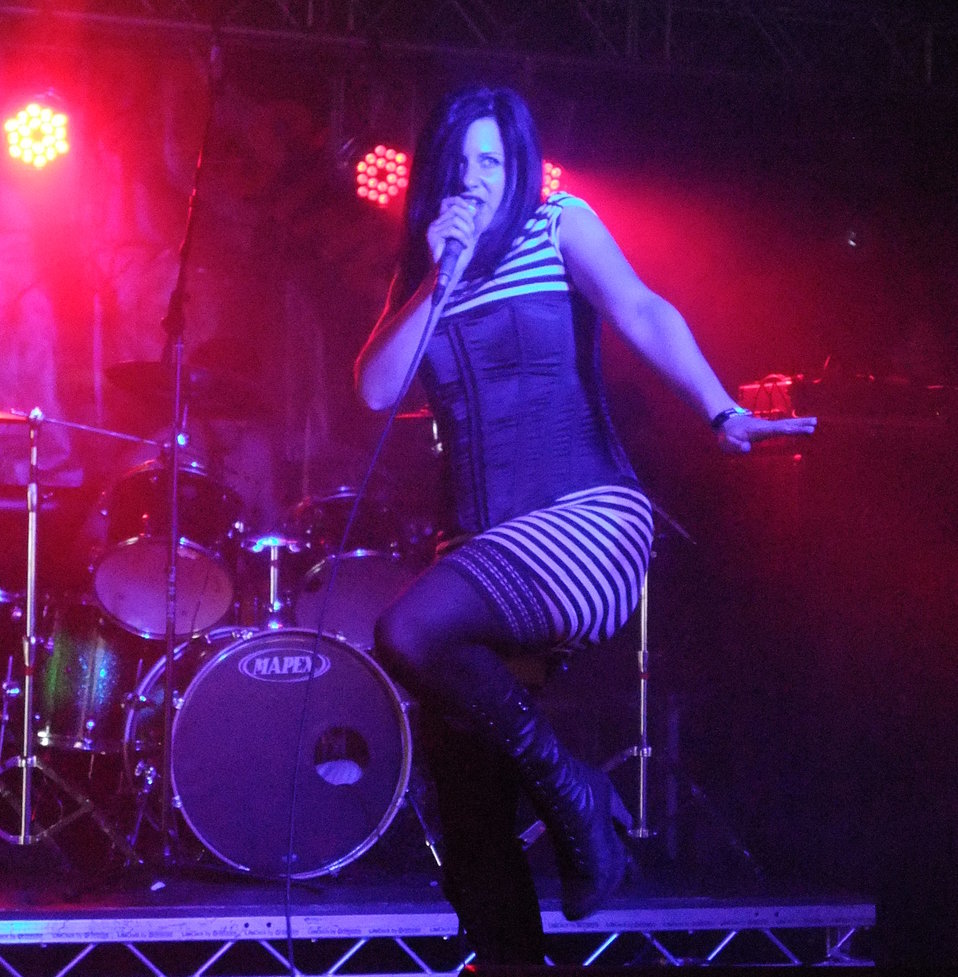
Sanguine, performing at Bloodstock Open Air in 2011.